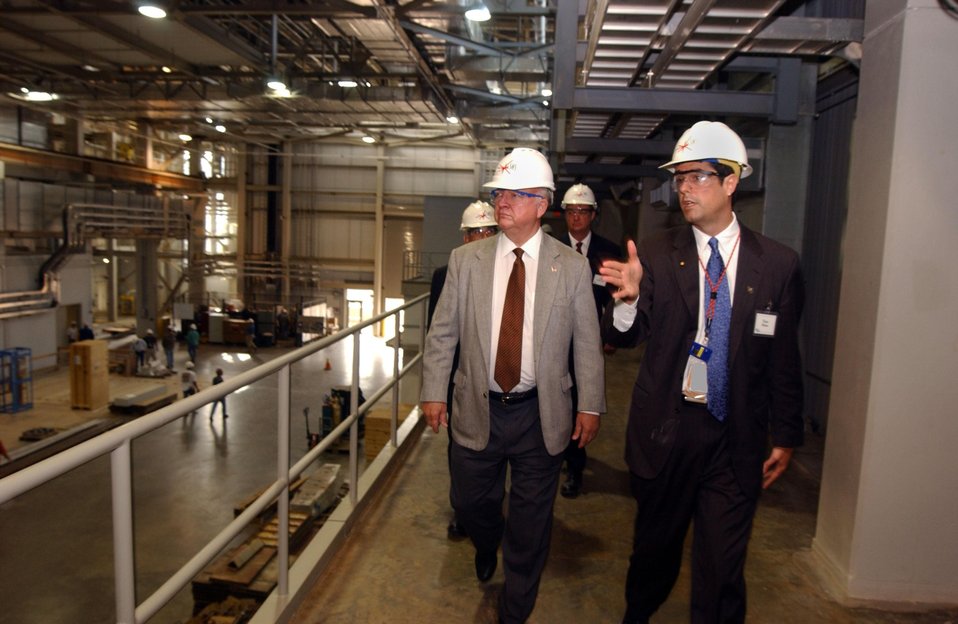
ENERGY SECRETARY SAMUEL BODMAN TOOK A TOUR OF THE SPALLATION NEUTRON SOURCE (SNS) AT OAK RIDGE NATIONAL LABORATORY (ORNL) IN AUGUST 2005.

THE SPALLATION NEUTRON SOURCE (SNS) IS AN ACCELERATOR BASED NEUTRON SOURCE BEING BUILT IN OAK RIDGE, TENNESSEE BY THE DEPARTMENT OF ENERGY. SCHEDULED FOR COMPLETION IN 2006, THE SNS WILL PROVIDE THE MOST INTENSE PULSED POWER NEUTRON BEAMS IN THE WORLD FOR SCIENTIFIC RESEARCH AND INDUSTRIAL DEVELOPMENT.